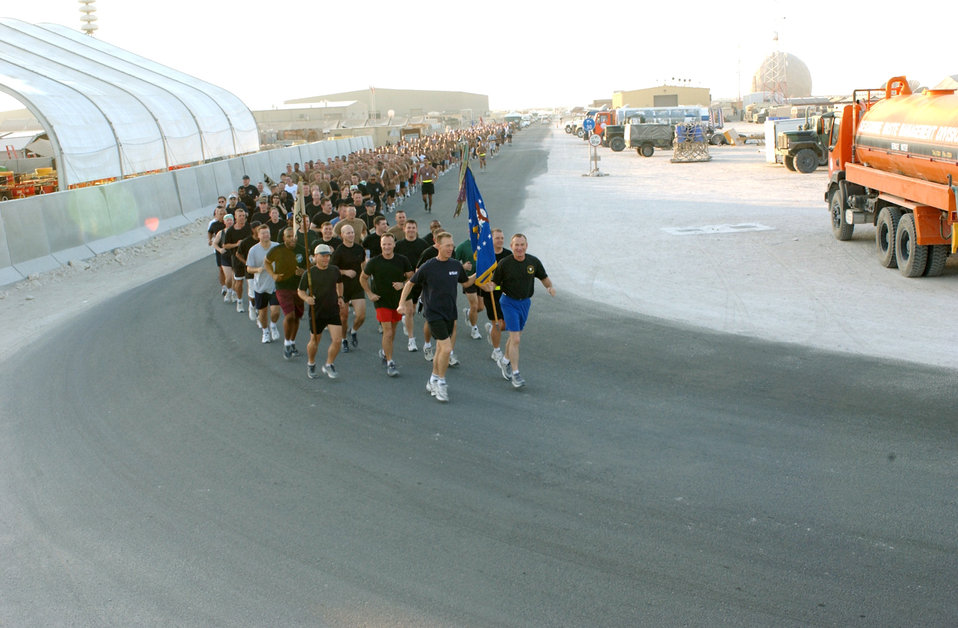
Getting fit to fight

SOUTHWEST ASIA -- Chief Master Sgt. Richard Small (left) and Col. Jack Egginton carry the Air Force flag during a fitness run at a forward-deployed location Oct. 29. More than 600 airmen from the 379th Air Expeditionary Wing participated. The run was a show of support for the new Air Force fitness standards. Small is the wing's command chief master sergeant, and Egginton is its commander.